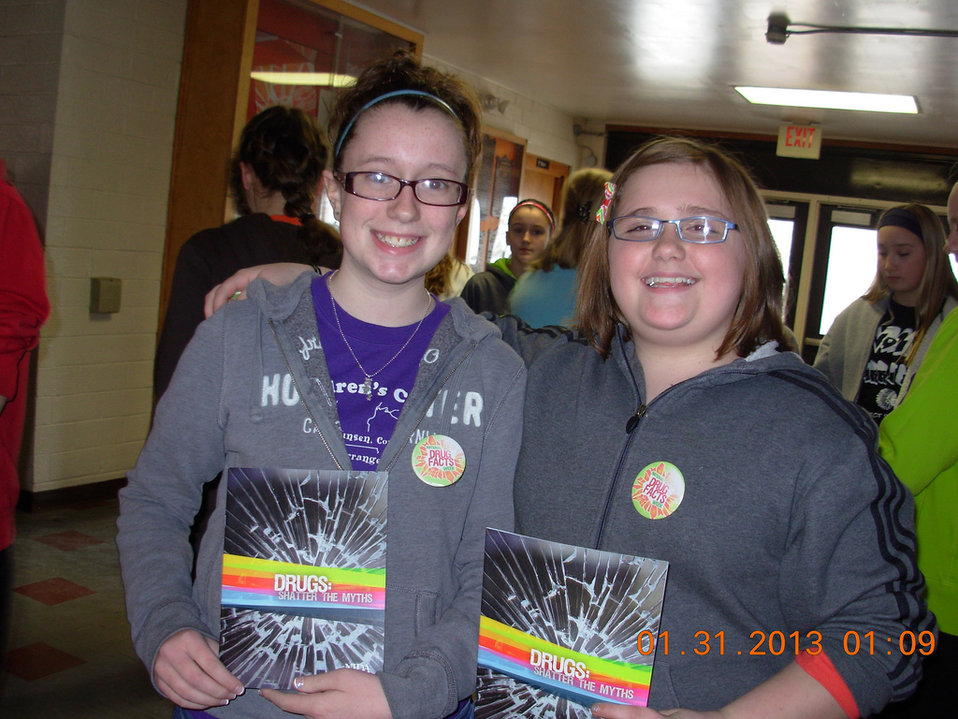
Iowa's SAFE Coalition, NDFW 2013

Van Buren County, IA. SAFE Coalition high school student run groups fighting issues of drug, alcohol, and tobacco abuse during NDFW 2013.